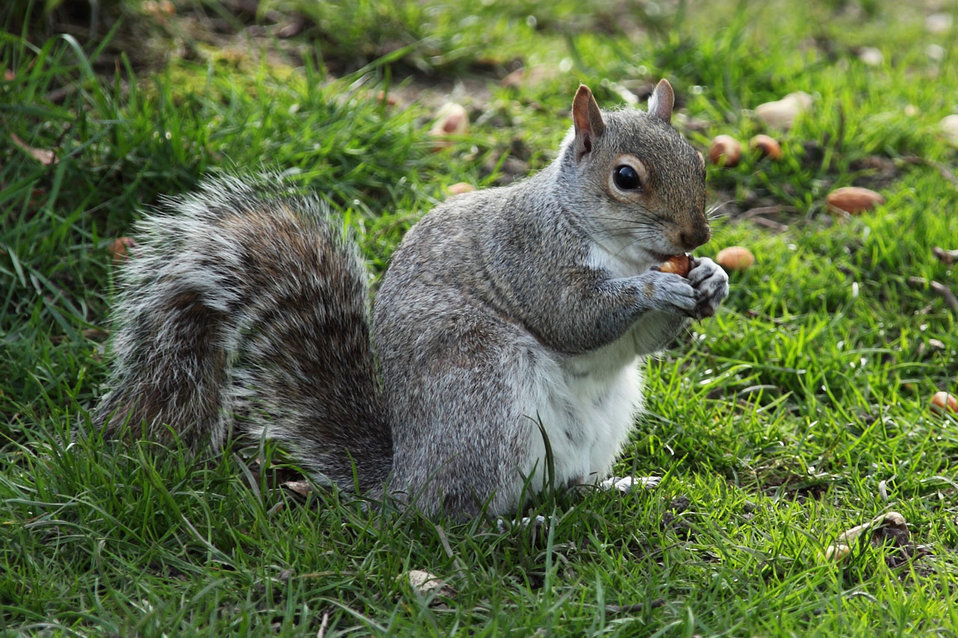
Squirrel eating in park.